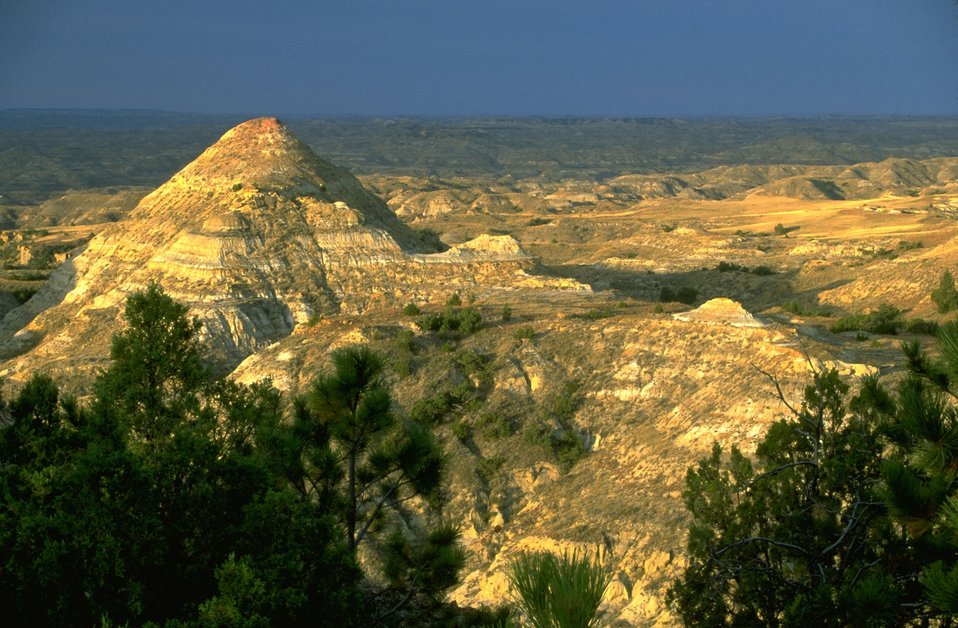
The sun turning the Terry Badlands to gold